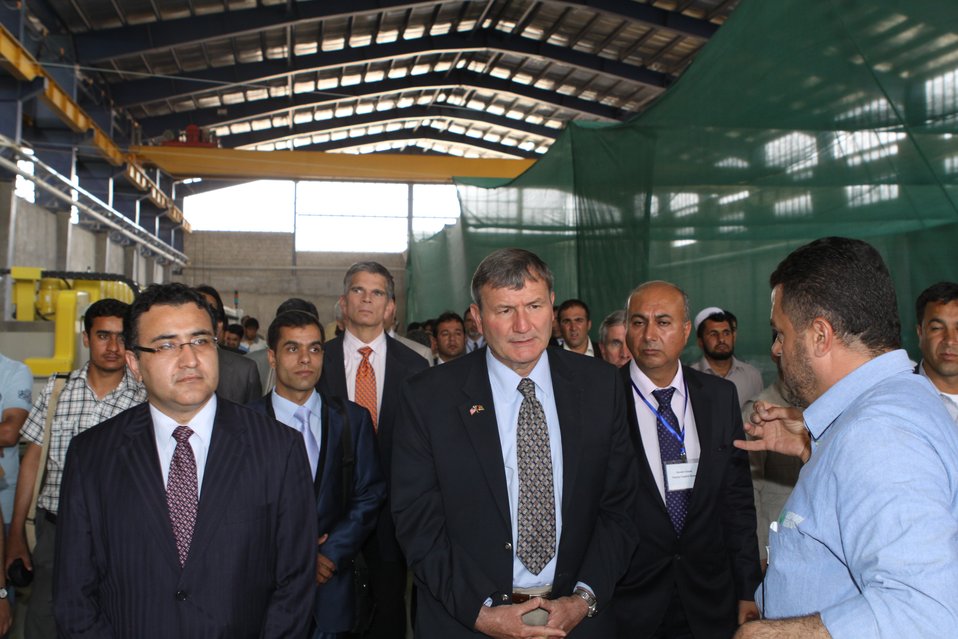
100525 Hirat Marble Conference 458